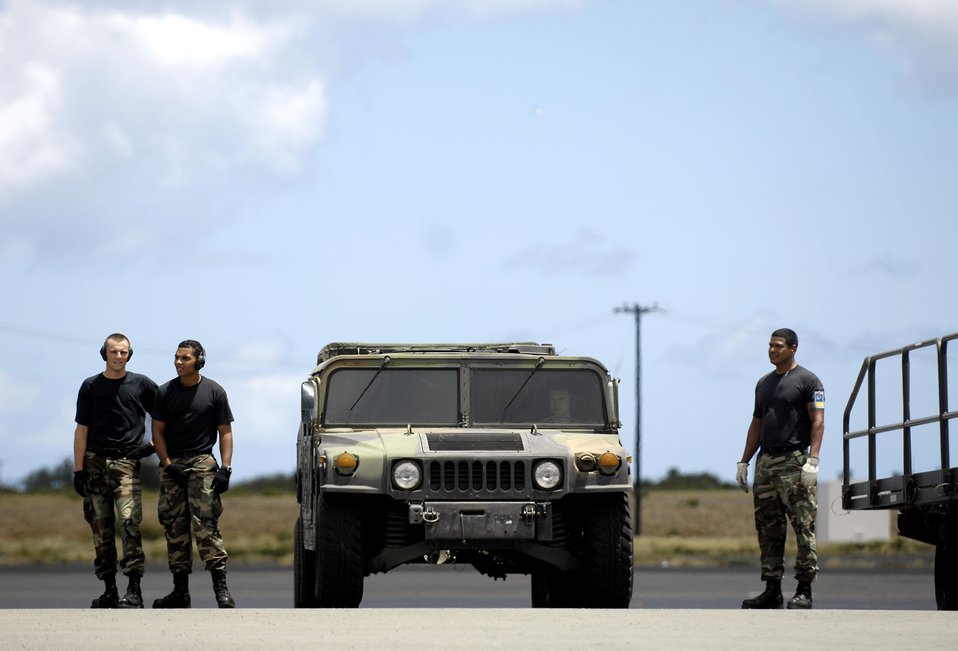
Hickam Rodeo team ready to go

Hickam Air Force Base, Hawaii, Rodeo team members wait to begin loading equipment on a C-17 Globemaster III during rodeo practice July 13 at Hickam Air Force Base, Hawaii. Members from the 535th Airlift Squadron and 15th Logistics Readiness Squadron Combat Mobility Element are practicing for upcoming Air Mobility Command Rodeo at McChord AFB, Wash.